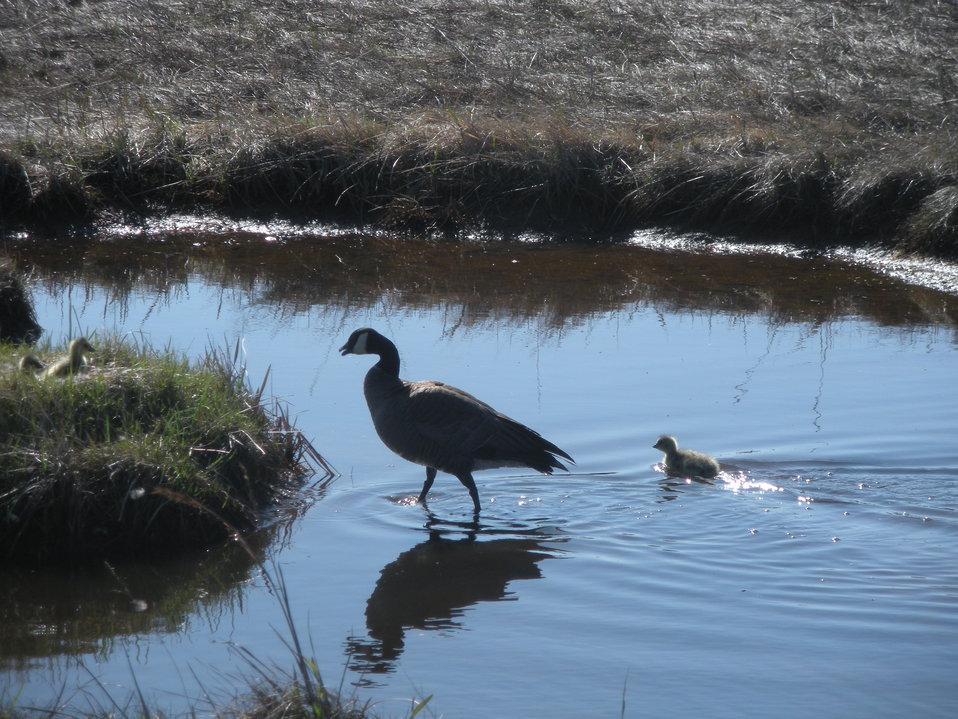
Cackling goose with goslings

Yukon Delta NWR